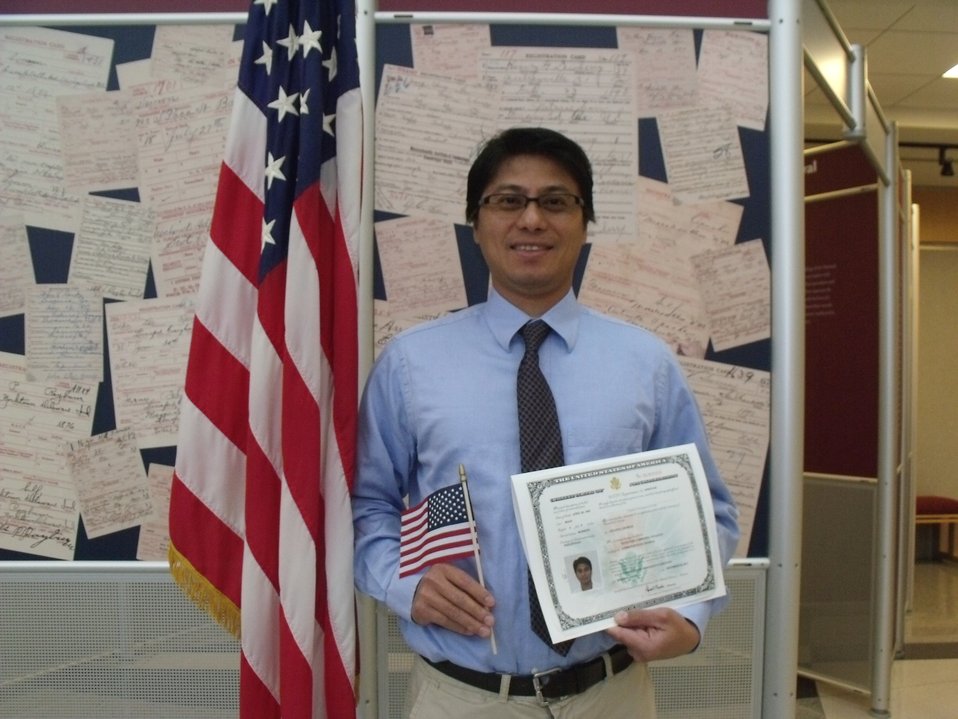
New Citizens